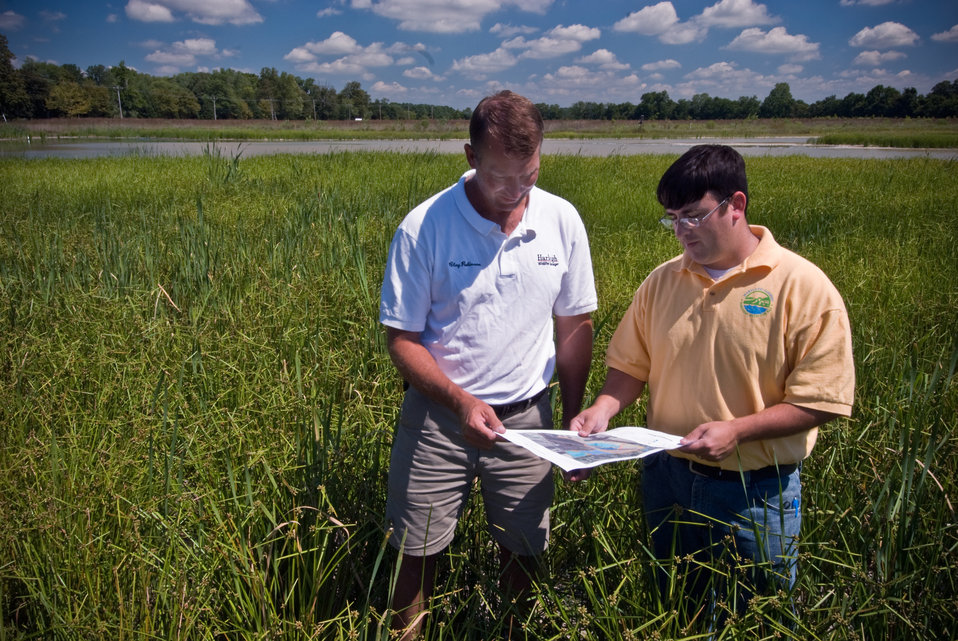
A U.S. Department of Agriculture (USDA) Natural Resource Conservation Service (NRCS) agent assists a local farmer in improving his conservation practices in order to protect the Chesapeake Bay watershed in Talbot County, Maryland on August 12, 2008.